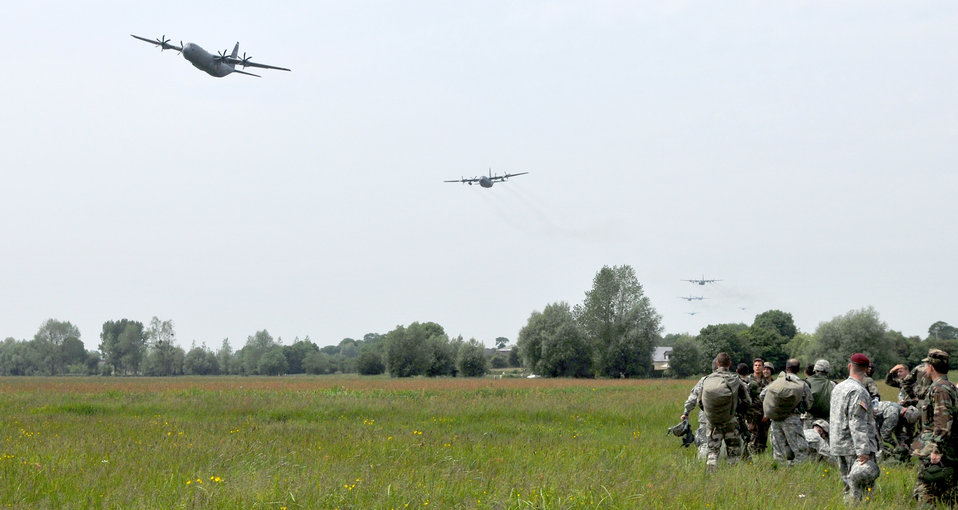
D-Day 66th anniversary

A C-130J Super Hercules leads a formation June 5, 2010 of other American C-130s and German and French C-160s above the drop zone where Allies landed during World War II in Normandy, France. The aircraft is from the 37th Airlift Squadron at Ramstein Air Base, Germany.